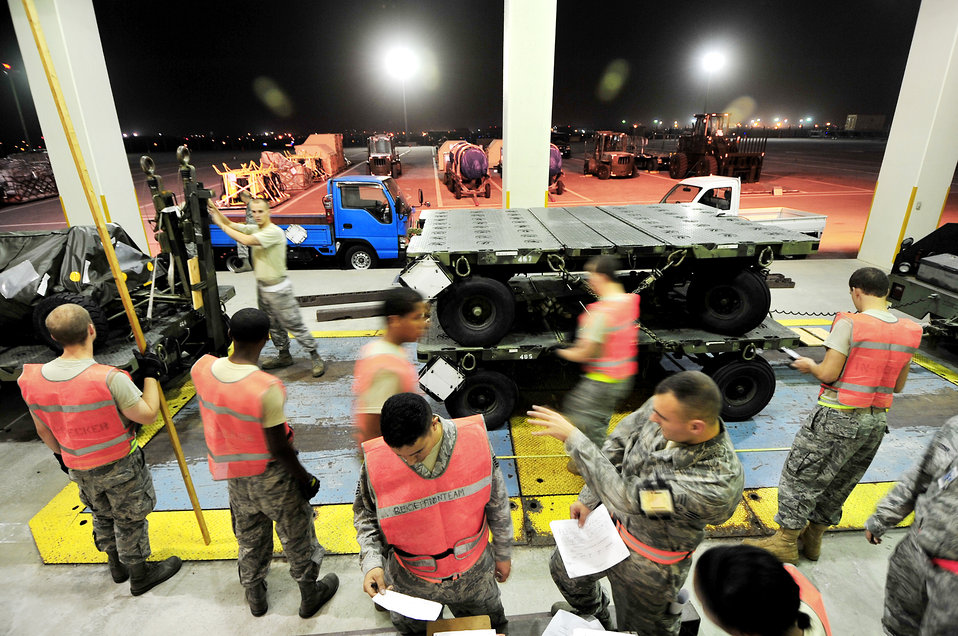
Beverly High 10-02

Airmen working the night shift ensure cargo is weighed and properly labeled before transport during a base exercise March 22, 2010, at Kadena Air Base, Japan. The 18th Wing participated in a local operational readiness exercise to test base Airmen's ability to defend Japan and maintain peace and stability in the Pacific region.